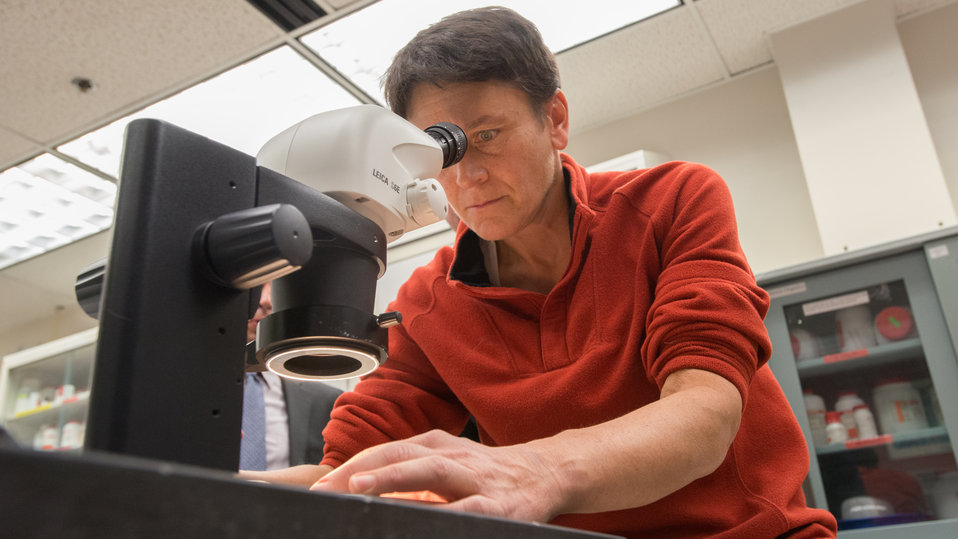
U.S. Department of Agriculture (USDA) Agricultural Research Service (ARS) National Center for Genetic Resources Preservation (NCGRP) Biological Science Technician Barbara Ambruzs prepares a plant tissue sample for microscopic viewing by Agriculture Secretary Tom Vilsack, during his visit to the Tissue Culture Preparation Laboratory, where they prepare different stages for cryogenic storage or for propagation in Ft. Collins, CO on Wednesday, Nov. 6, 2013. NCGRP is the largest agricultural gene bank facility in the U.S. The NCGRP staff conducts groundbreaking research to develop more efficient and effective means for preserving plant and animal germplasm, and for better understanding the genetic structure of these invaluable materials. The research findings, preservation techniques, and specialized technology developed by the NCGRP have been adopted by gene banks around the world: many international scientists travel to the NCGRP for research and training.